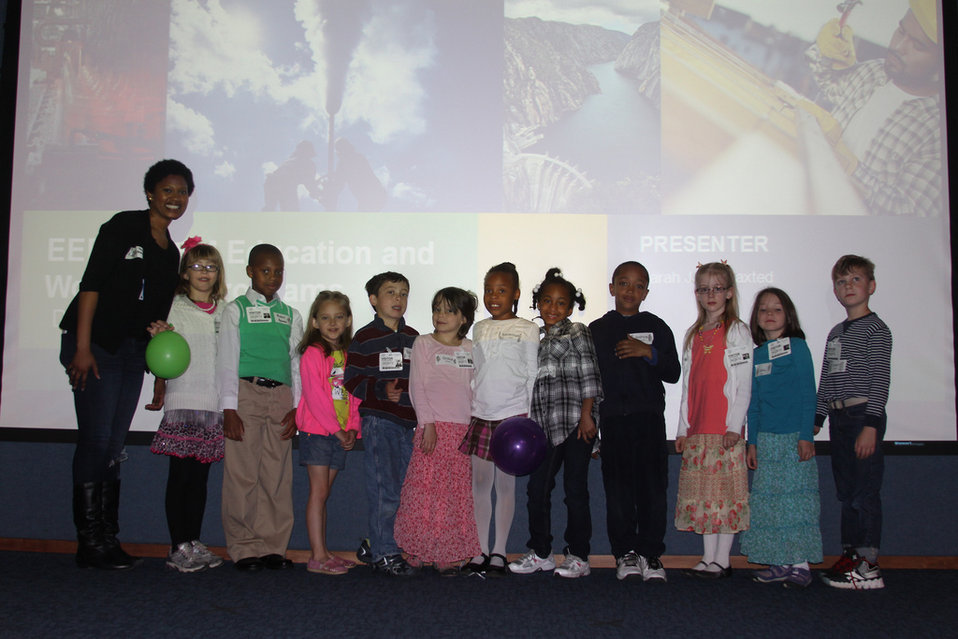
Dana's Group